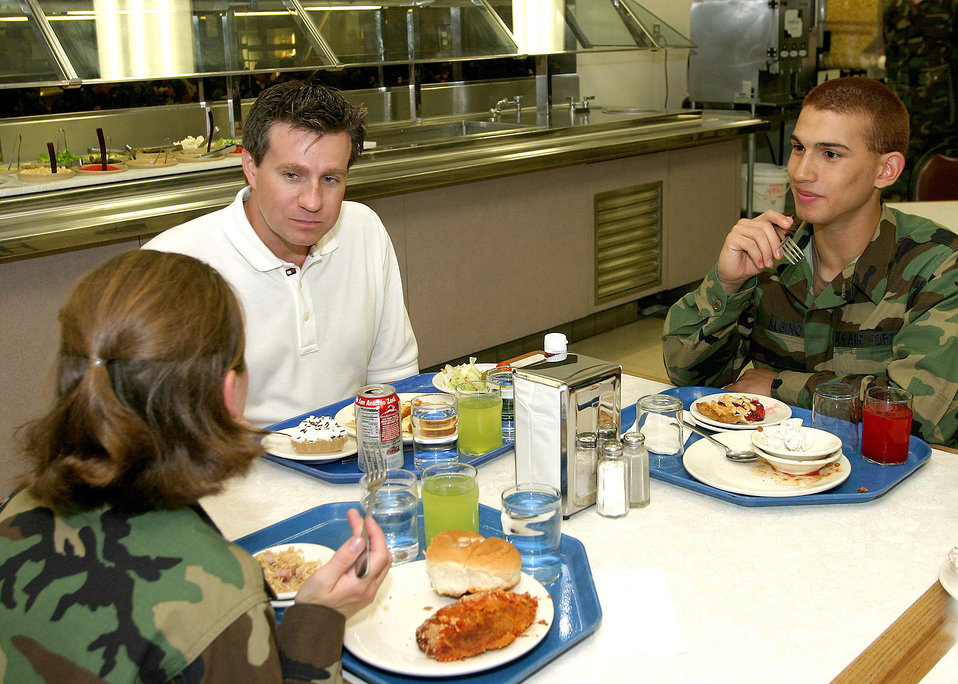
'Song pilot' visits Lackland

LACKLAND AIR FORCE BASE, Texas -- Basic trainees Natalie Gootee (left) and Adrian Albino talk with singer/songwriter Dwayne O'Brien during lunch at the 324th Training Squadron here June 8. Mr. O'Brien, a private pilot, toured the base June 8 and entertained about 400 basic trainees and base Airmen during a